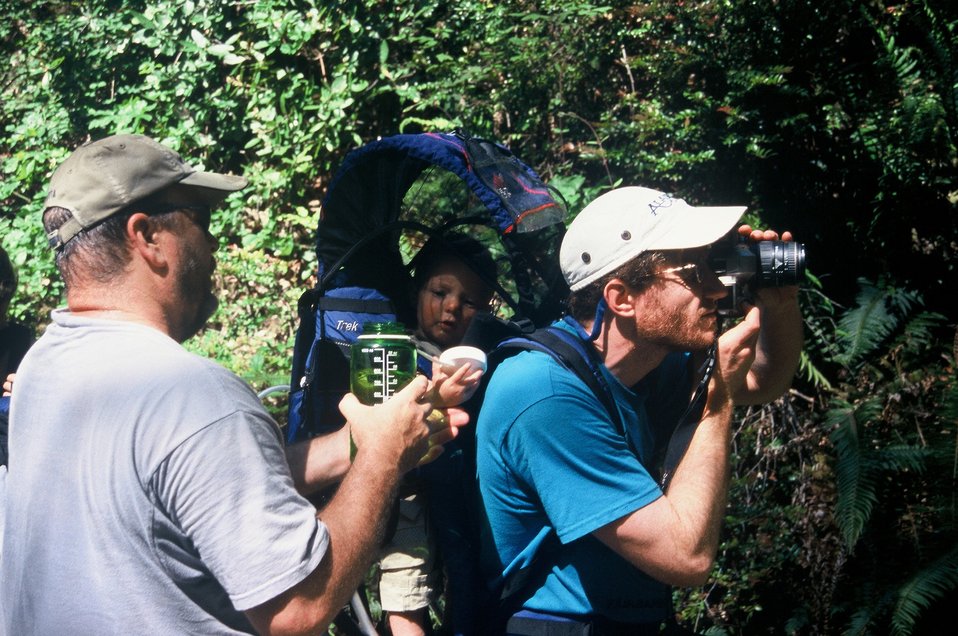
Wild section of the Rogue River from Grave Creek to Foster Bar May 19 to May 22.